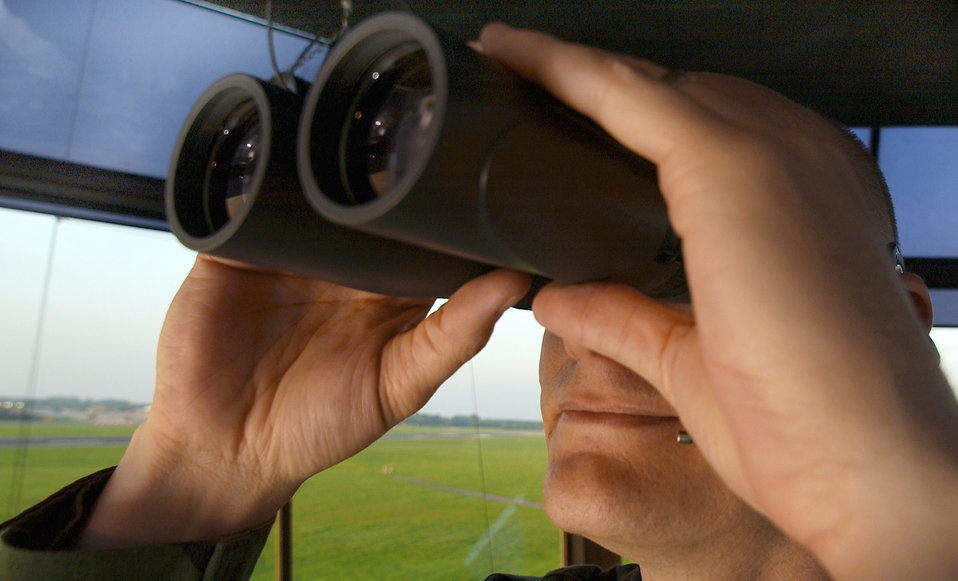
Here's looking at you

ROYAL AIR FORCE FAIRFORD, England -- Senior Master Sgt. Robert Braun scans the runway for foreign objects during flight operations here May 18. Sergeant Braun is an air traffic controller with the 100th Operations Support Squadron at Royal Air Force Mildenhall, England.